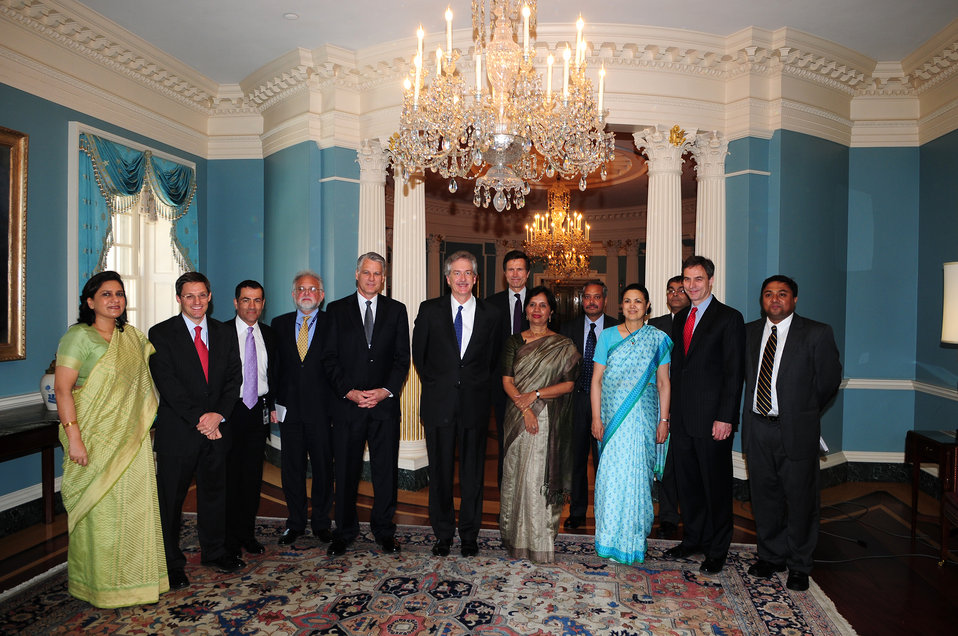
Foreign Policy Group Poses for a Photo

The U.S.-India Strategic Dialogue Foreign Policy Group poses for a photo at the U.S. Department of State in Washington, D.C., on June 2, 2010.